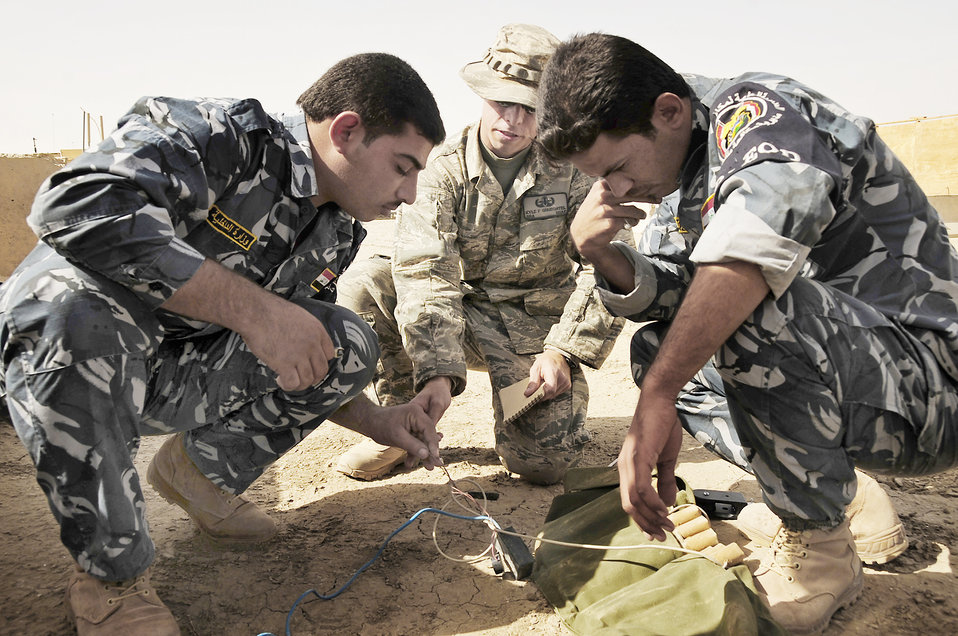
Airmen train Iraqi police

Senior Airman Kyle Gnuechtel advises Iraqi police explosive ordnance disposal technicians as they inert a suicide bomber's vest during a training scenario conducted by Air Force EOD members Nov. 4, 2009, at Forward Operating Base Cedar, Iraq. Airman Gnuechtel is a 407th Expeditionary Civil Engineer Squadron EOD technician deployed from Dyess Air Force Base, Texas.